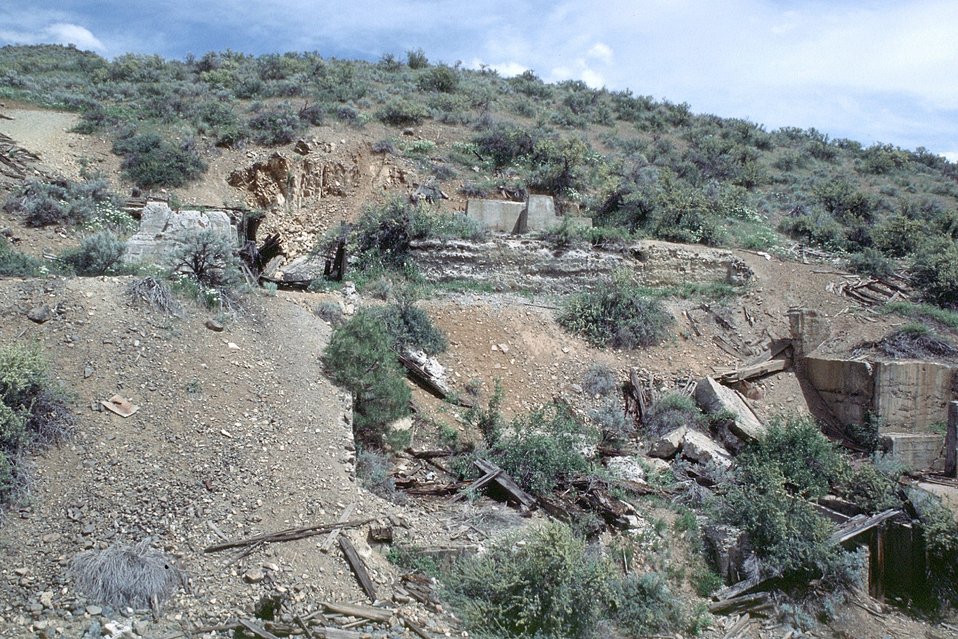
Foundations of abandoned mine works buildings at AML Poorman, Vale District, Oregon.